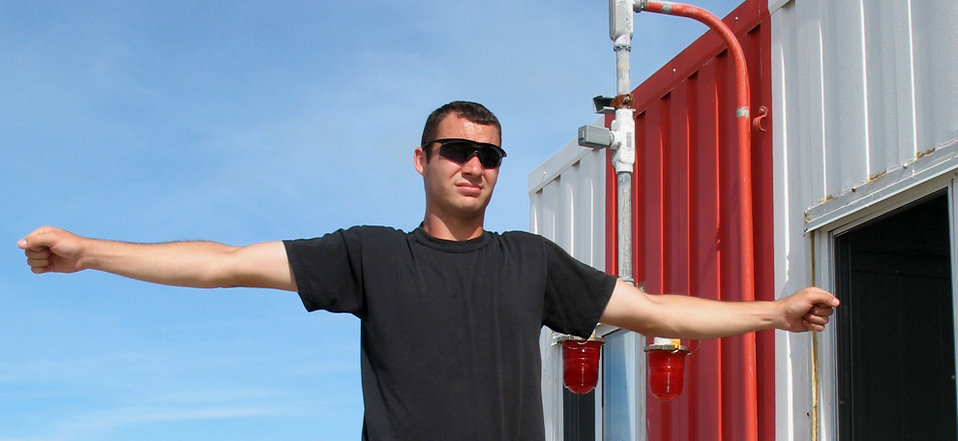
Power pros 'wire' Wake Island

Staff Sgt. Brian Kaufman gives hand signals as he watches the nylon straps of an aircraft arrest system release at Wake Island Sept. 20. Sergeant Kaufman is assigned to the 15th Civil Engineer Squadron.